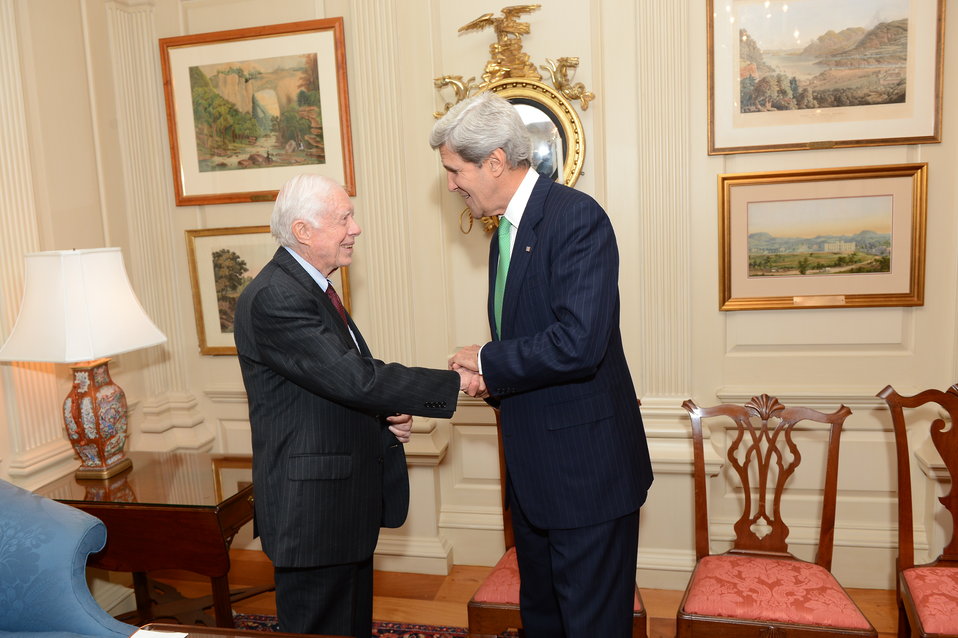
Secretary Kerry Shakes Hands With Former President Carter

U.S. Secretary of State John Kerry shakes hands with Former President of the United States Jimmy Carter at the U.S, Department of State in Washington, D.C., on July 22, 2103.